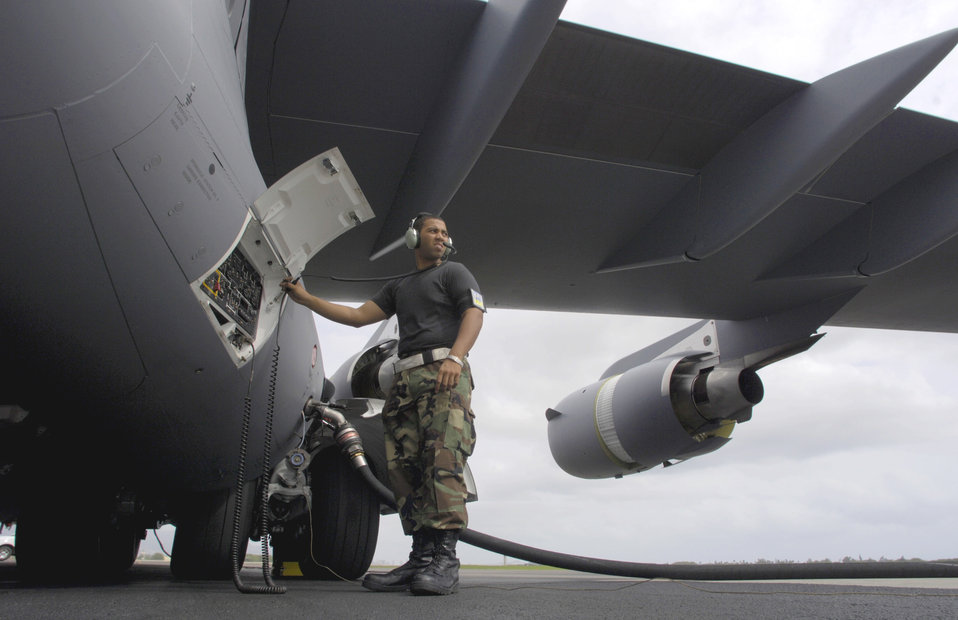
Maintenance troops

Airman 1st Class Justin Soileau-Gobert refuels a C-17 Globemaster III at Hickam Air Force Base, Hawaii, Tuesday, Feb. 28, 2006. Airman Soileau-Gobert is a crew chief with the 15th Maintenance Group, which is a combined active duty and Air National Guard maintenance group.